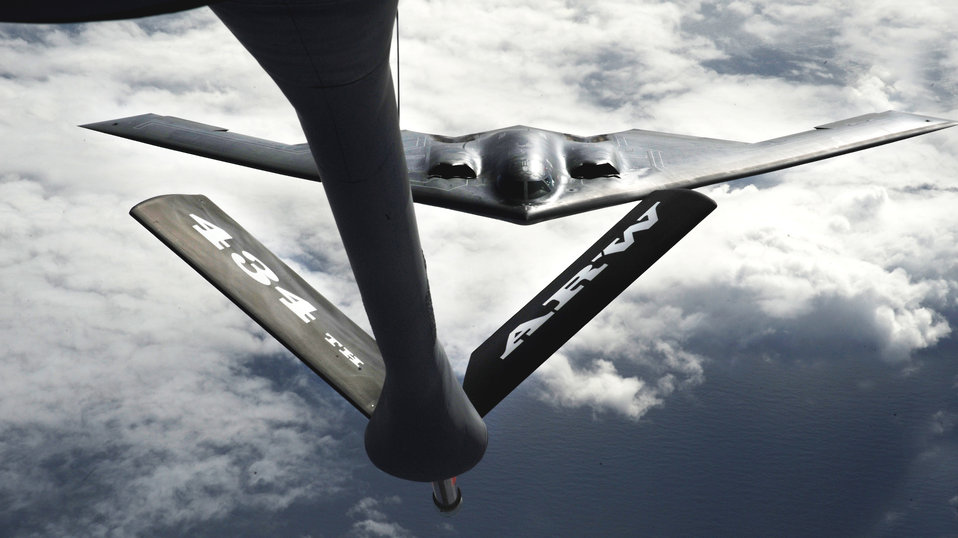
B-2 aircrew participates in exercise in Pacific

A B-2 Spirit positions to receive fuel from a KC-135 Stratotanker March 10 over the Pacific Ocean. More than 270 Airmen and four B-2s are deployed to Andersen Air Force Base, Guam, as part of a continuous bomber presence in the region. Pacific theater refueling operations are conducted by 434th Air Refueling Wing Airmen from Grissom Air Reserve Base, Ind. The B-2 is from the 509th Bomb Wing, 13th Bomb Squadron, Whiteman AFB, Mo.